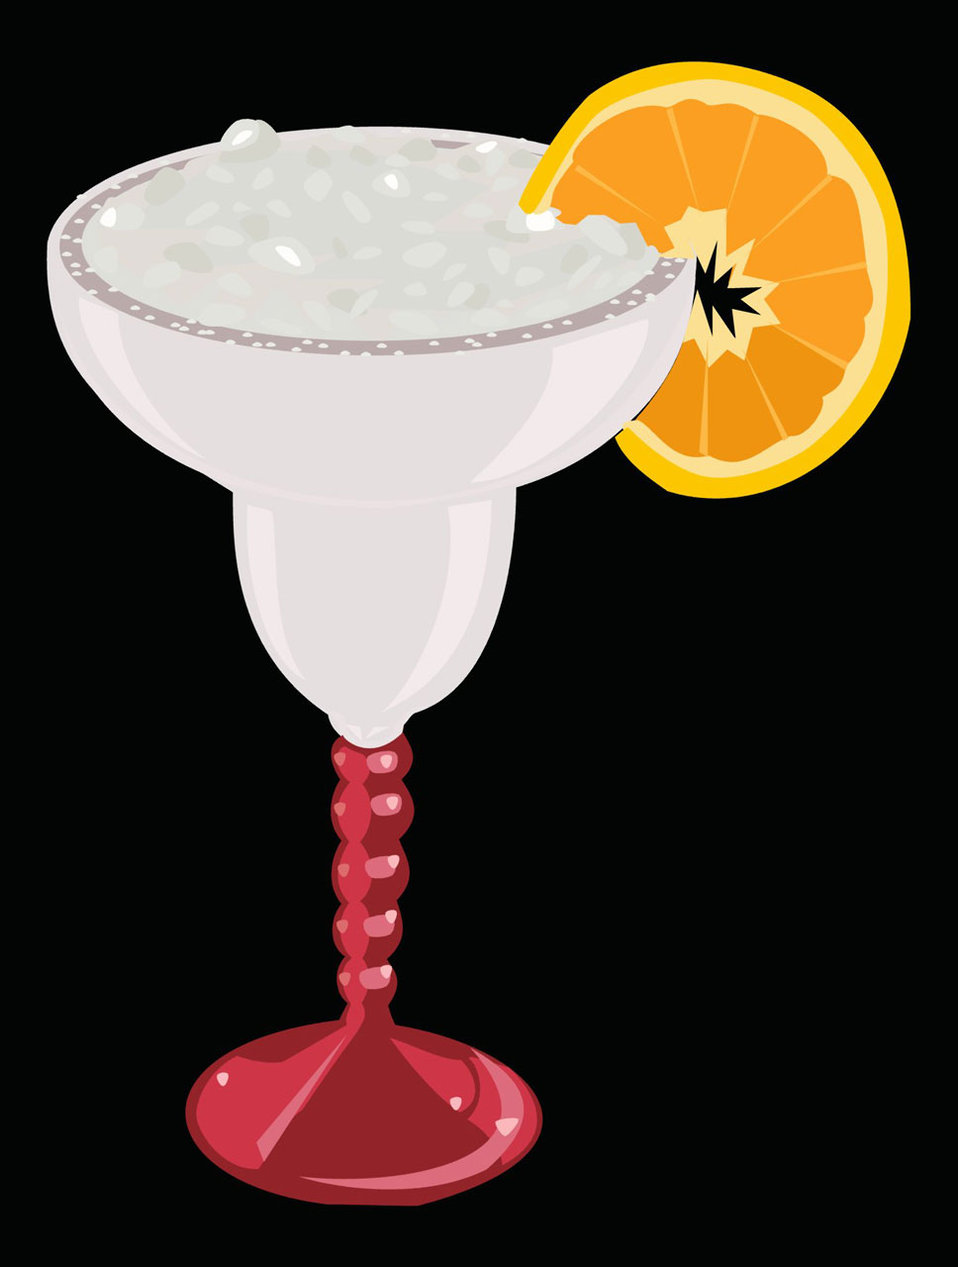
Margarita

Digital art by prairieghsot.